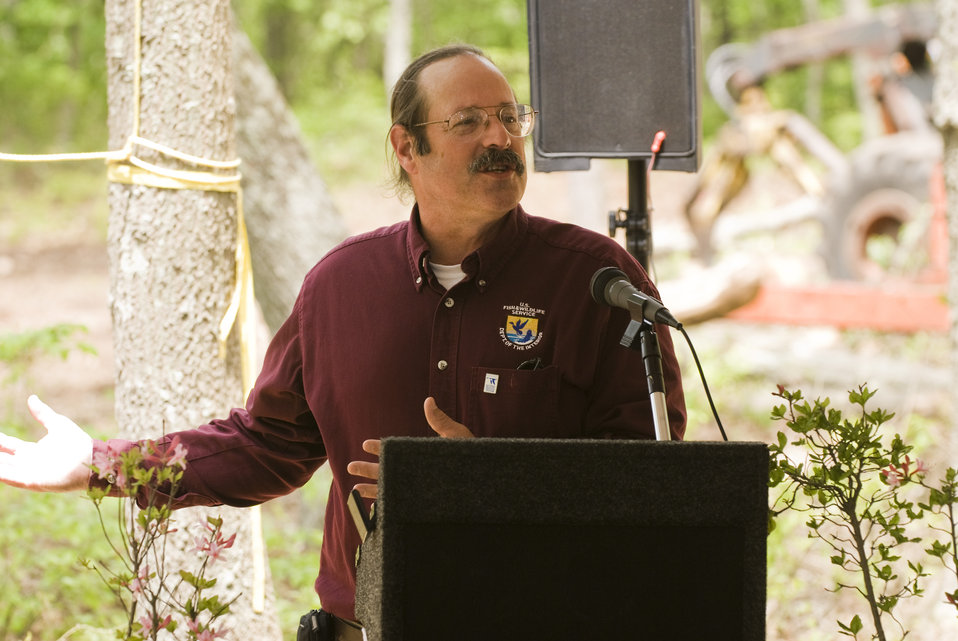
Northeast Region Refuge Chief - Tony Léger